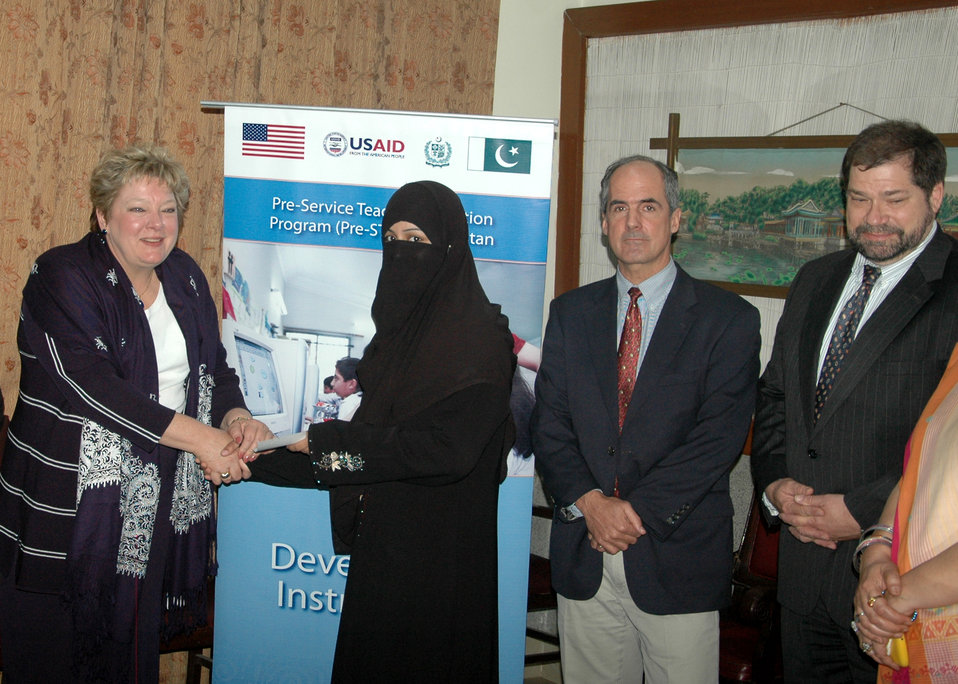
Pre-Service Teachers Education Program (Pre-STEP)

Lahore, February 21, 2012 - Deputy Mission Director USAID/Pakistan Ms. Karen Freeman distributing scholarships to B. Ed (Hons.) students at IER, University of the Punjab. Mr. Ted Gehr, Provincial Director USAID/Punjab is also present at the occasion.